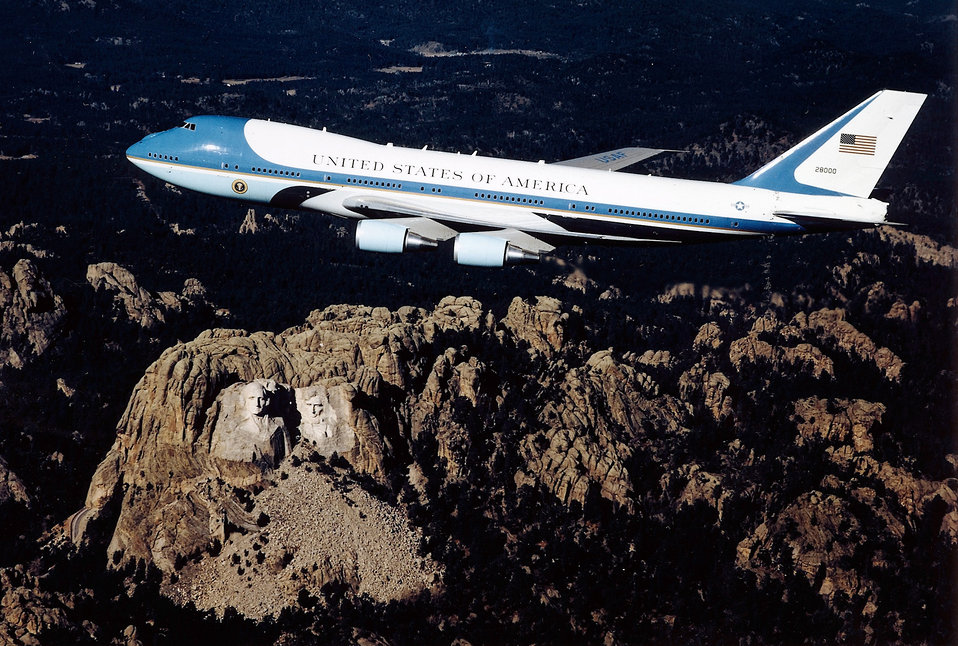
VC-25A

FILE PHOTO -- Air Force One flies over Mount Rushmore. Principal differences between the VC-25A and the standard Boeing 747, other than the number of passengers carried, are the electronic and communications equipment aboard Air Force One, its interior configuration and furnishings, self-contained baggage loader, front and aft air-stairs, and the capability for in-flight refueling. These aircraft are flown by the presidential aircrew, maintained by the presidential maintenance branch, and are assigned to Air Mobility Command's 89th Airlift Wing, Andrews Air Force Base, Md.